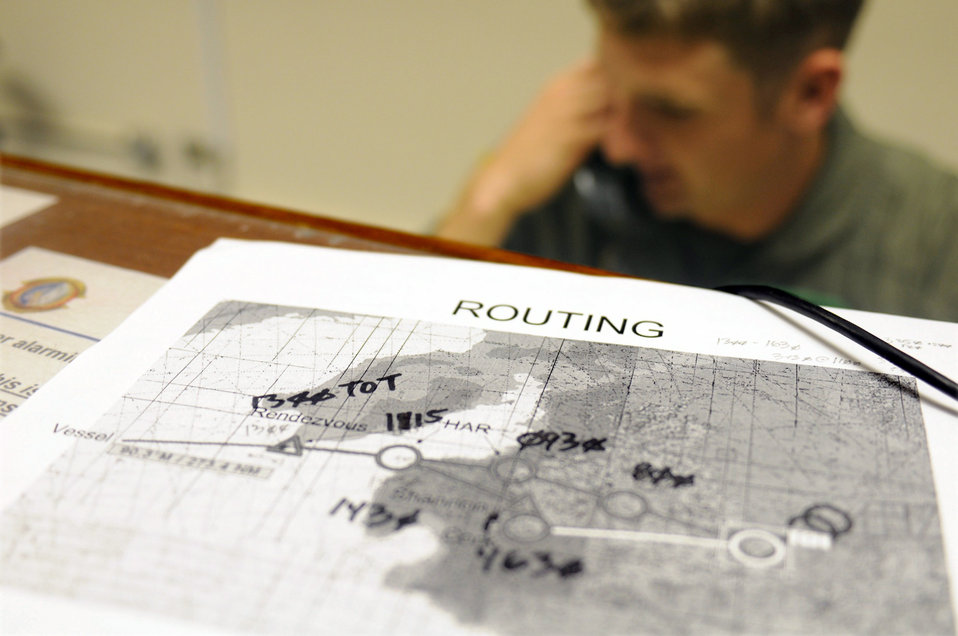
Airmen contribute to rescue effort at sea

Capt. John Frederick talks with the Rescue Coordination Center at Royal Air Force Kinloss in England about an ongoing rescue June 26 at RAF Lakenheath, England. A worker on a cargo ship approximately 700 miles west of Ireland required immediate medical attention and officials from the U.S. Air Force and Royal Air Force are assisting in the rescue effort. Captain Frederick is a 56th Rescue Squadron HH-60G Pave Hawk pilot.